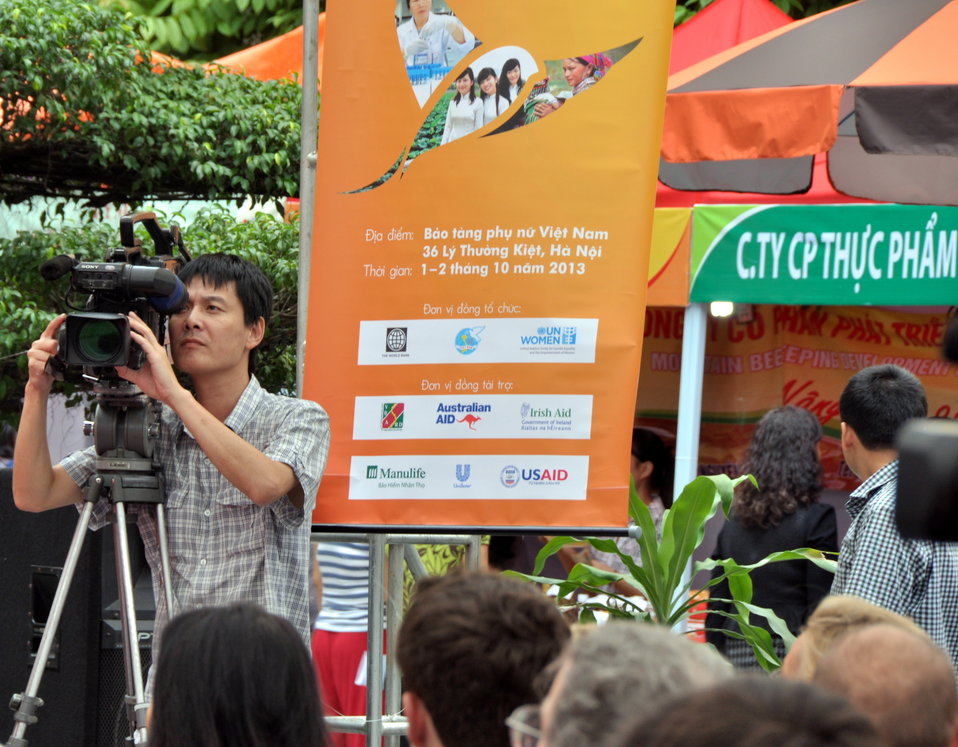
Vietnam Women Innovation Day 2013

Hanoi, October 1, 2013.